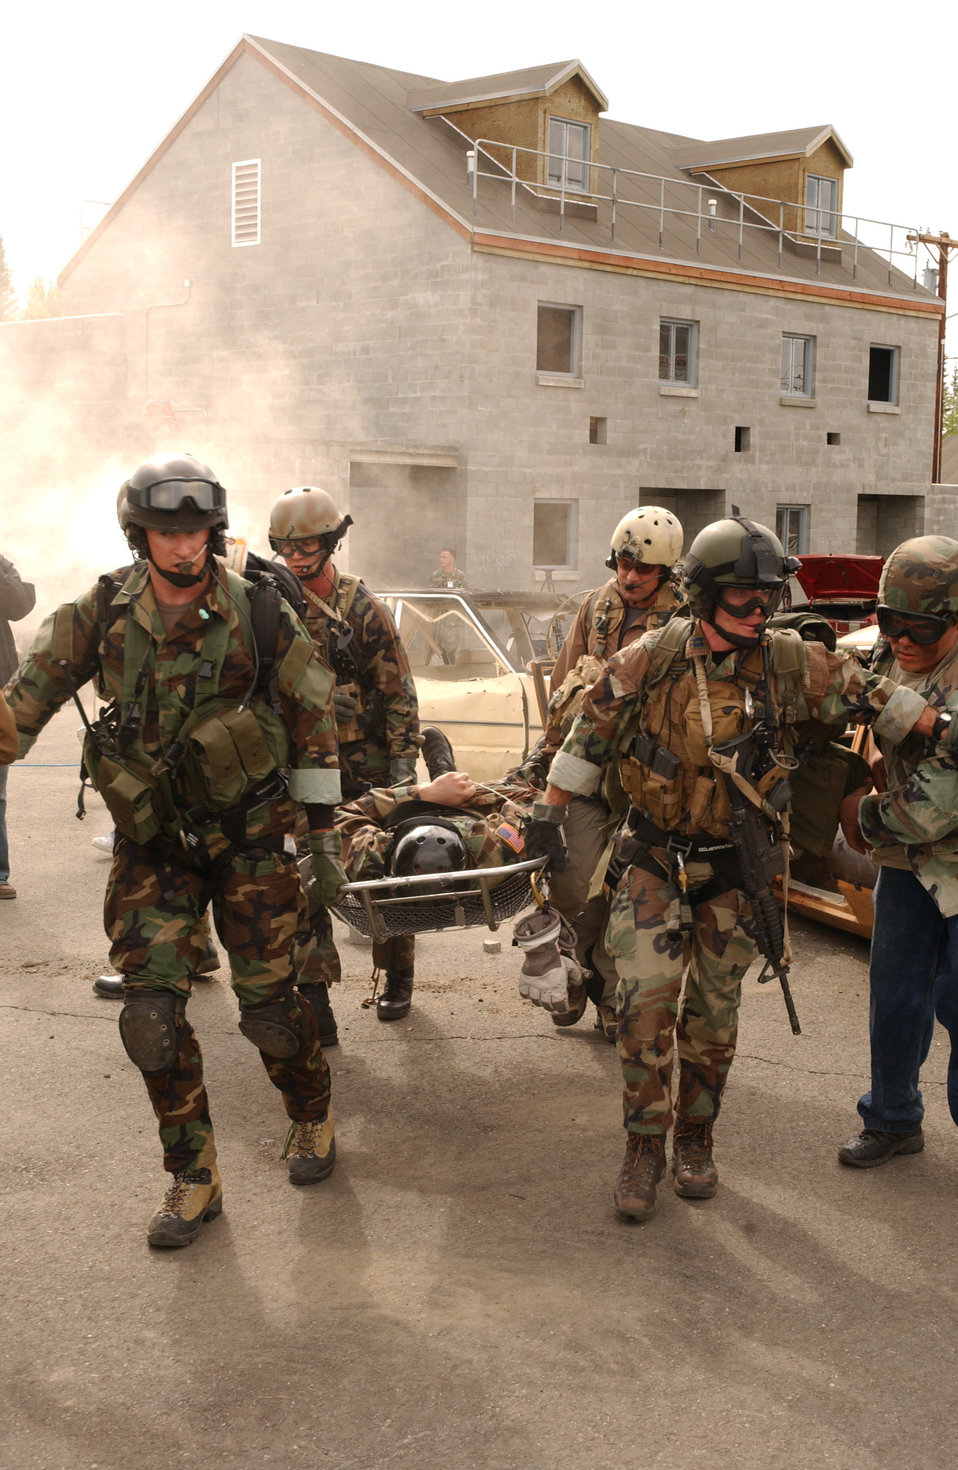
Northern Edge 2006

Airmen with the 31st Rescue Squadron at Kadena Air Base, Japan, transport simulated victims during a combat search and rescue mission at Exercise Northern Edge 2006 at Fort Wainwright, Alaska, on Tuesday, June 6, 2006.